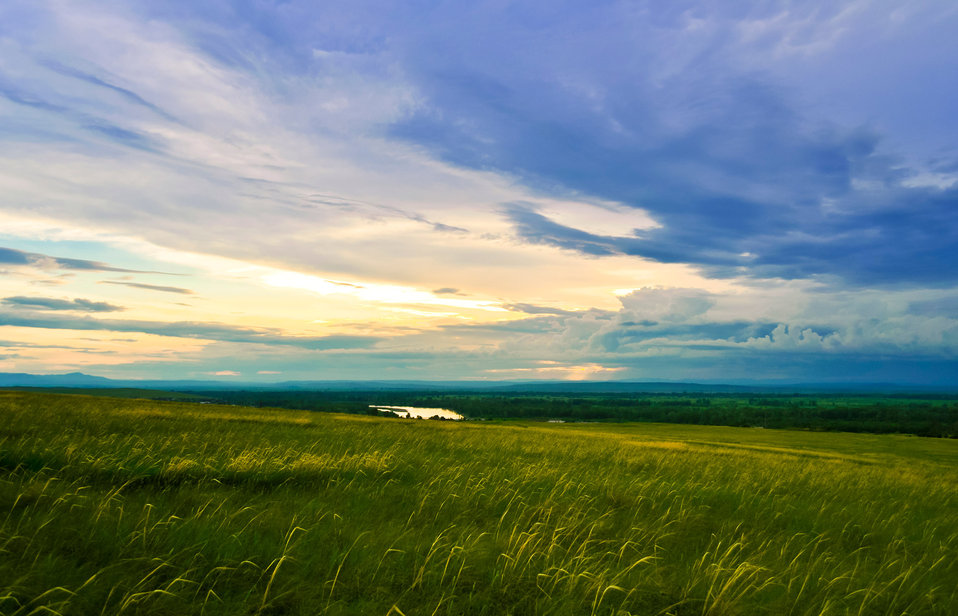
Fabulous sky at sunset.